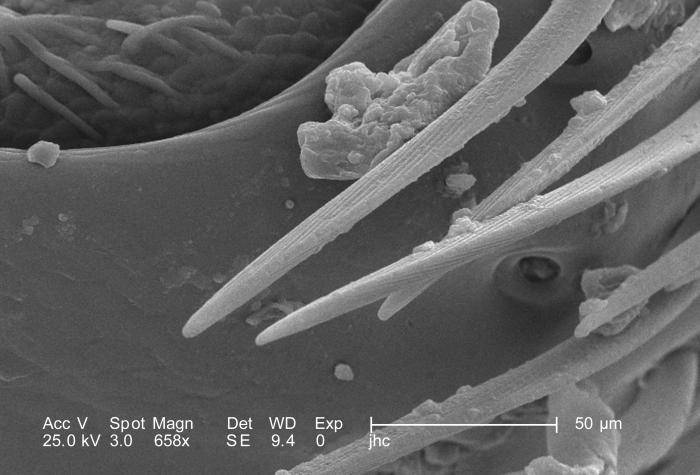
At a magnification of 658X, a number of time higher than PHIL 9888, this scanning electron micrograph (SEM) revealed the morphologic exoskeletal details of a female velvet ant's, Dasymutilla sp., leg joint. As a member of the Phylum Arthropoda, i.e., Arthro = 'jointed', and poda 'leg', this insect is supported by a jointed exoskeleton, thereby, facilitating mobility of all of its body parts. The velvet ant is not really an ant at all, but a wasp, which merely resembles an ant, hence its name. It is a member of the Family, Mutillidae, and the Order, Hymenoptera.Note the presence of sensorial 'hairs' upon the surface of the exoskeleton, which are really not hairs as in the mammalian sense, i.e., composed of keratin, but chitinous extensions composed of the same protein as that of the exoskeleton itself.